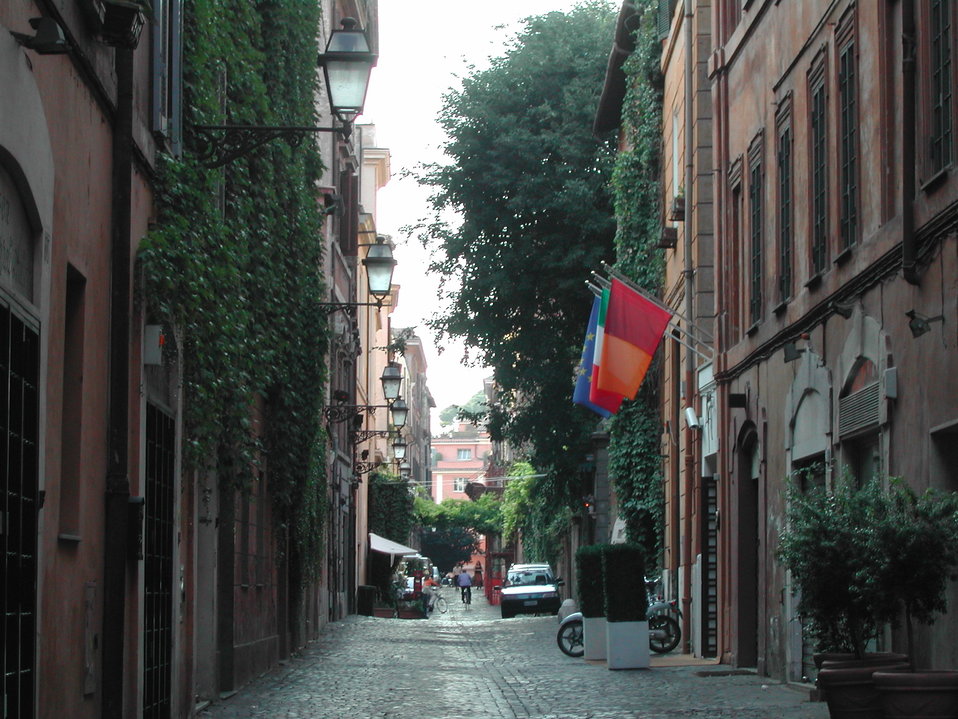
03 Margutta